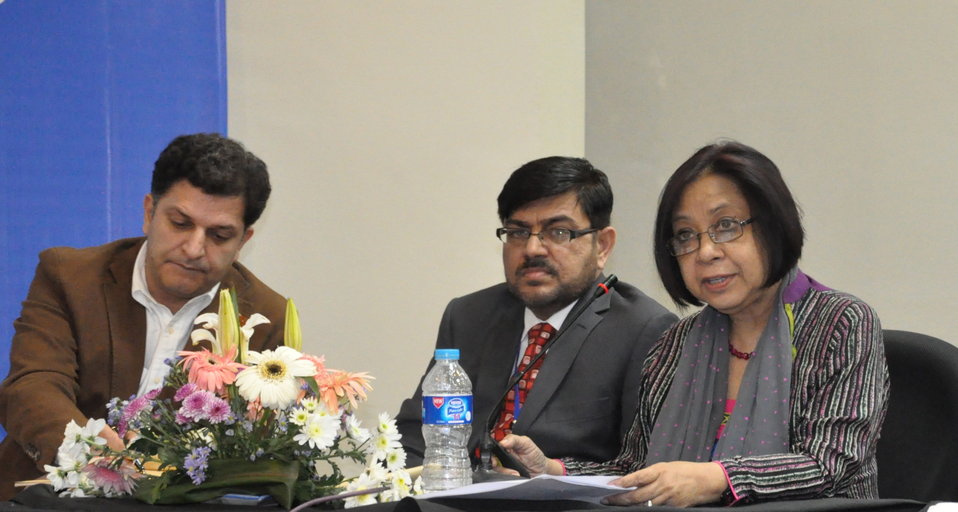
Presenting case studies from different countries